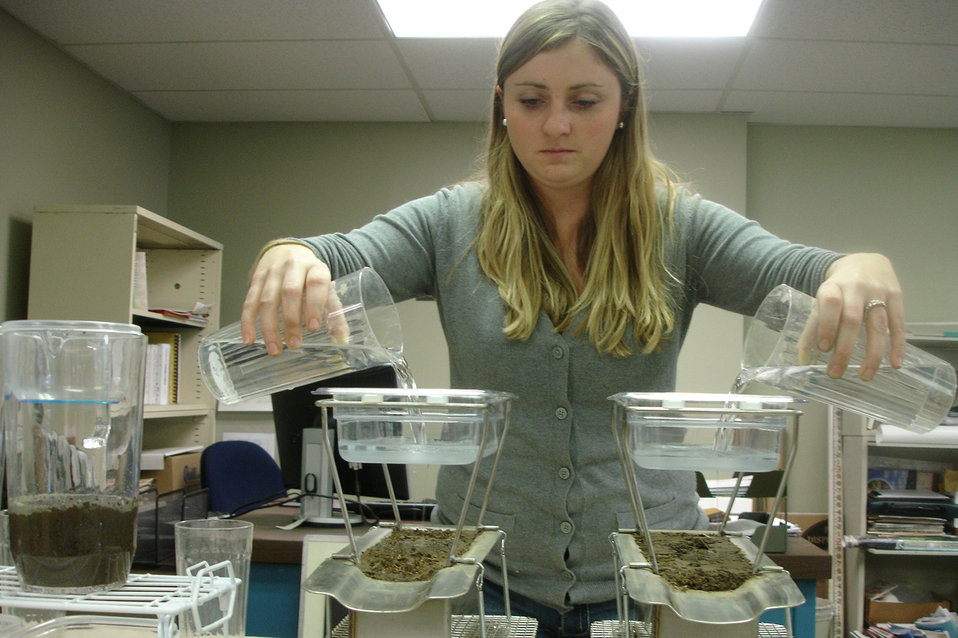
NY - Molly

New York wetland ecology graduate student Molly Stetz gives of her time and expertise to the U.S. Department of Agriculture's (USDA) Natural Resource Conservation Service (NRCS) through the Earth Team program.